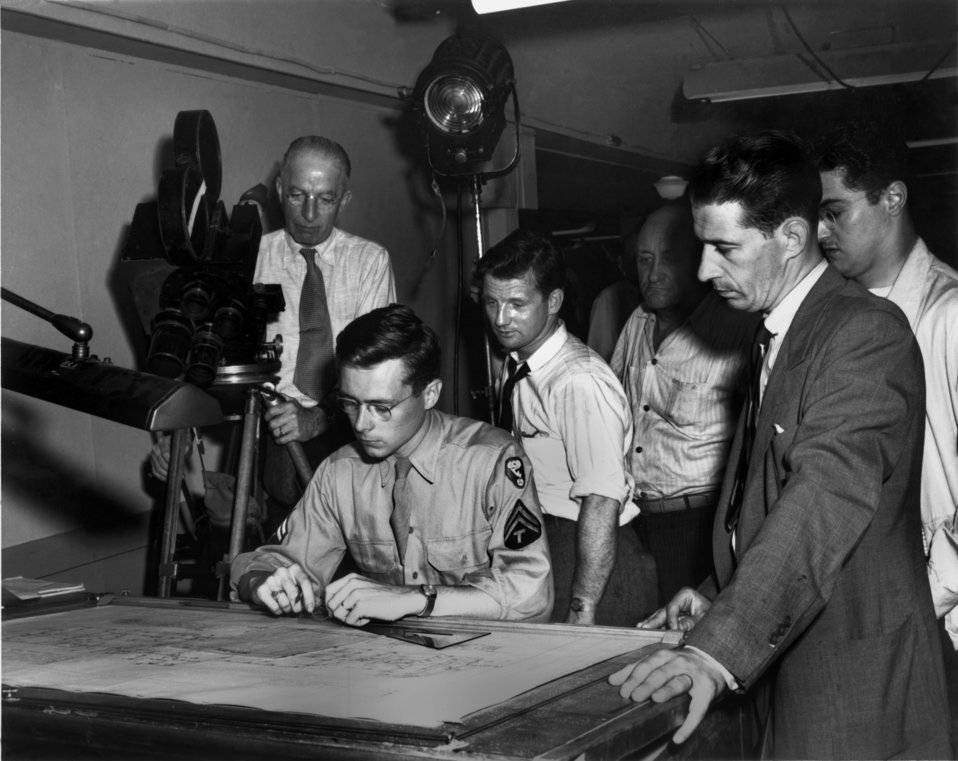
March of Dimes Oak Ridge Tennessee

1823-1 DOE photo Ed Westcott 6/1946 Oak Ridge Tennessee